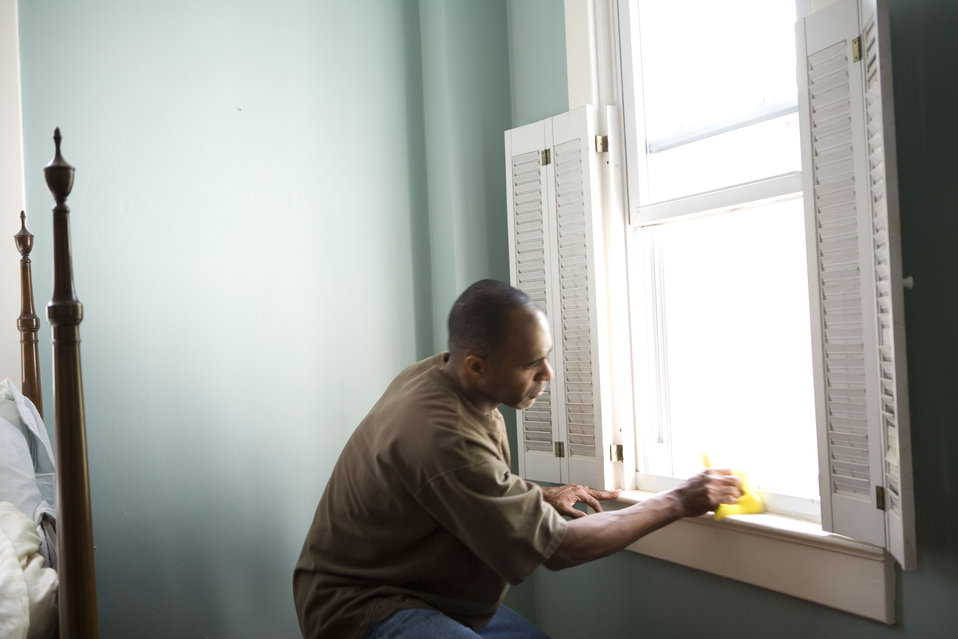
When renovating a home, you should use a damp sponge or cloth to clean dust collected on a window sill, as the dust may contain asbestos or lead-based paint. Home maintenance is an ongoing process for any homeowner, and here we see an African-American man as he was preparing a window in his home for a general cleaning.